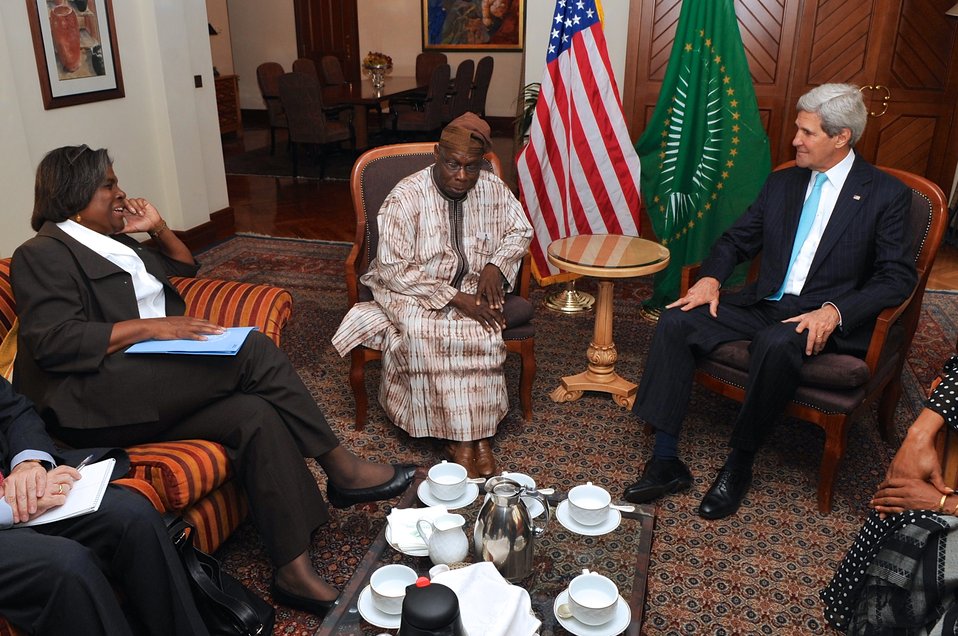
Secretary Kerry, Assistant Secretary Thomas-Greenfield Discuss South Sudan With Former Nigerian President Obasanjo

U.S. Secretary of State John Kerry and U.S. Assistant Secretary of State for African Affairs Linda Thomas-Greenfield listen to former Nigerian President Olusegun Obasanjo - now chairperson of the African Union's Commission of Inquiry - speak about the conflict in South Sudan during a meeting in Addis Ababa, Ethiopia, on May 2, 2014.